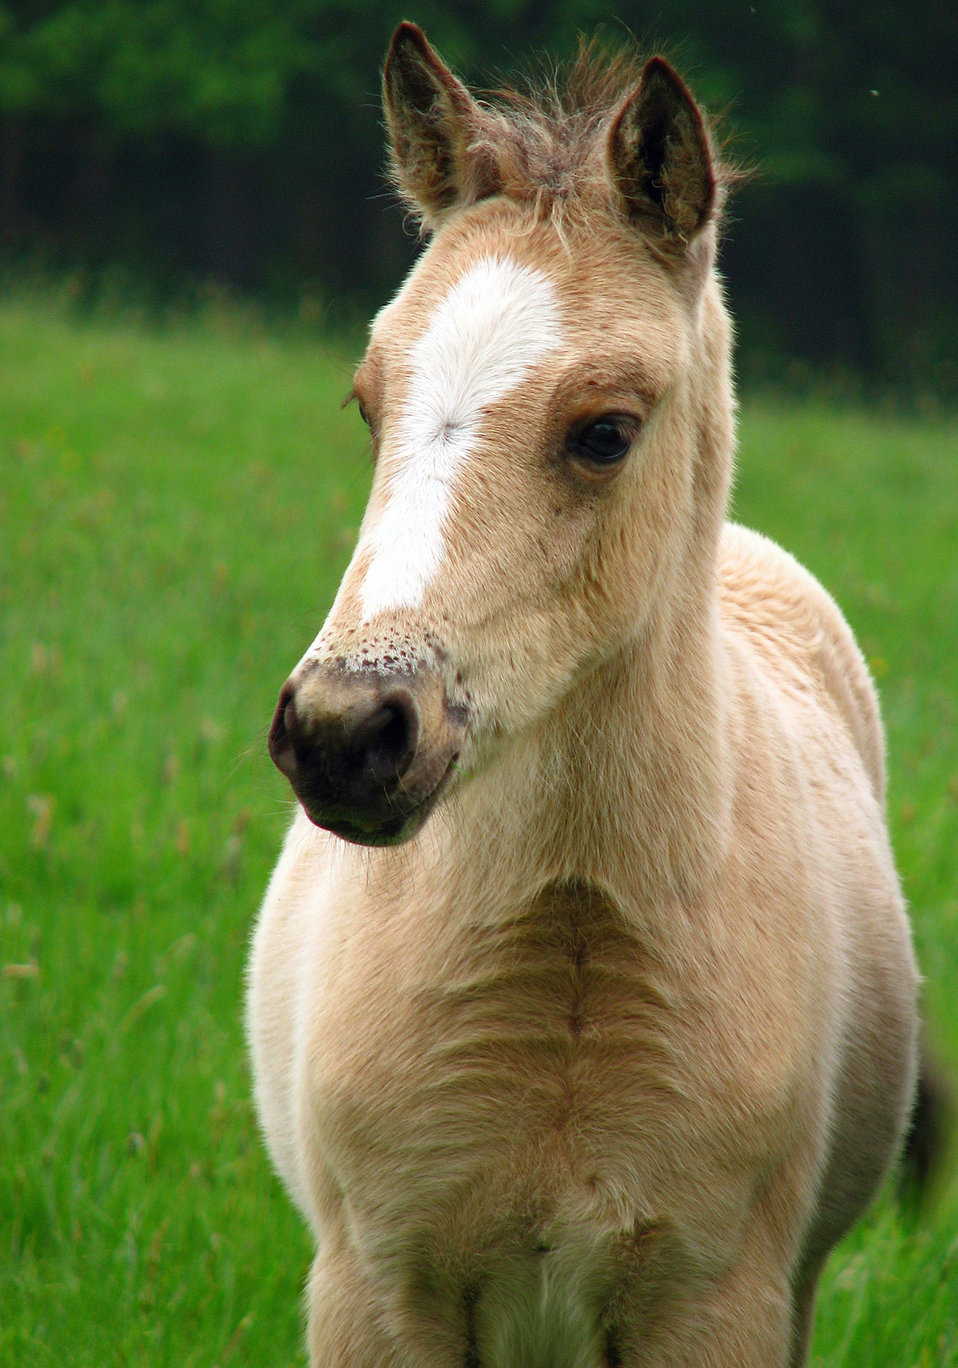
Foal

Beautiful new forest pony foal in close-up portrait.